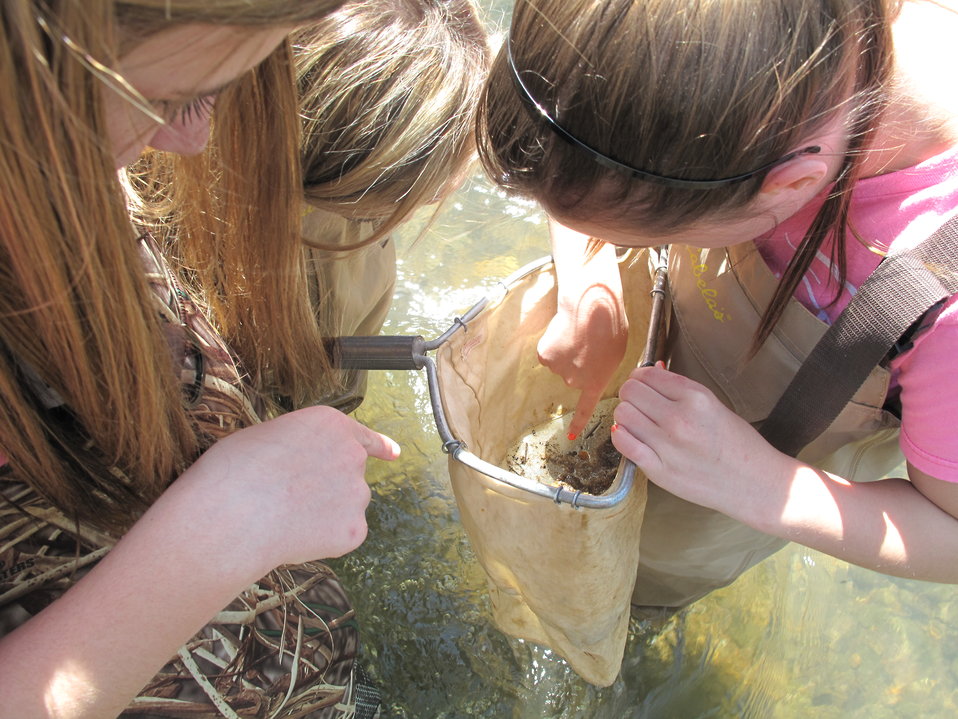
Student pointing out a macroinvertebrate

Over the course of four days in late April 2014, every eighth grade student at North Carolina’s Macon Middle School, Highlands School, Nantahala School, and Trimont Christian Academy visited Cartoogechaye Park, in Macon County, to learn about rivers.

The students rotated through four stations:
1) water chemistry where they had the opportunity to help test water from Cartoogechaye Creek to gain an idea of the stream’s water quality;
2) aquatic insects, where students collected and identified animals like mayflies and caddisflies, learning how life in the river reflects the health of the river
3) fish, where they were able to collect and identify fish in the stream, and then
4) stream flow, where they measured and calculated the downstream movement of water, including the velocity of the water and the total volume of water being moved per second.

The event was organized by the University of Georgia's Coweeta Long-Term Ecological Research (LTER) Program, which is based at the USFS Coweeta Hydrologic Laboratory. (coweeta.uga.edu/), with sizable support from the Land Trust for the Little Tennessee. Other supporters include the U.S. Fish and Wildlife Service, N.C. Natural Heritage Program, and N.C. Division of Water Resources.